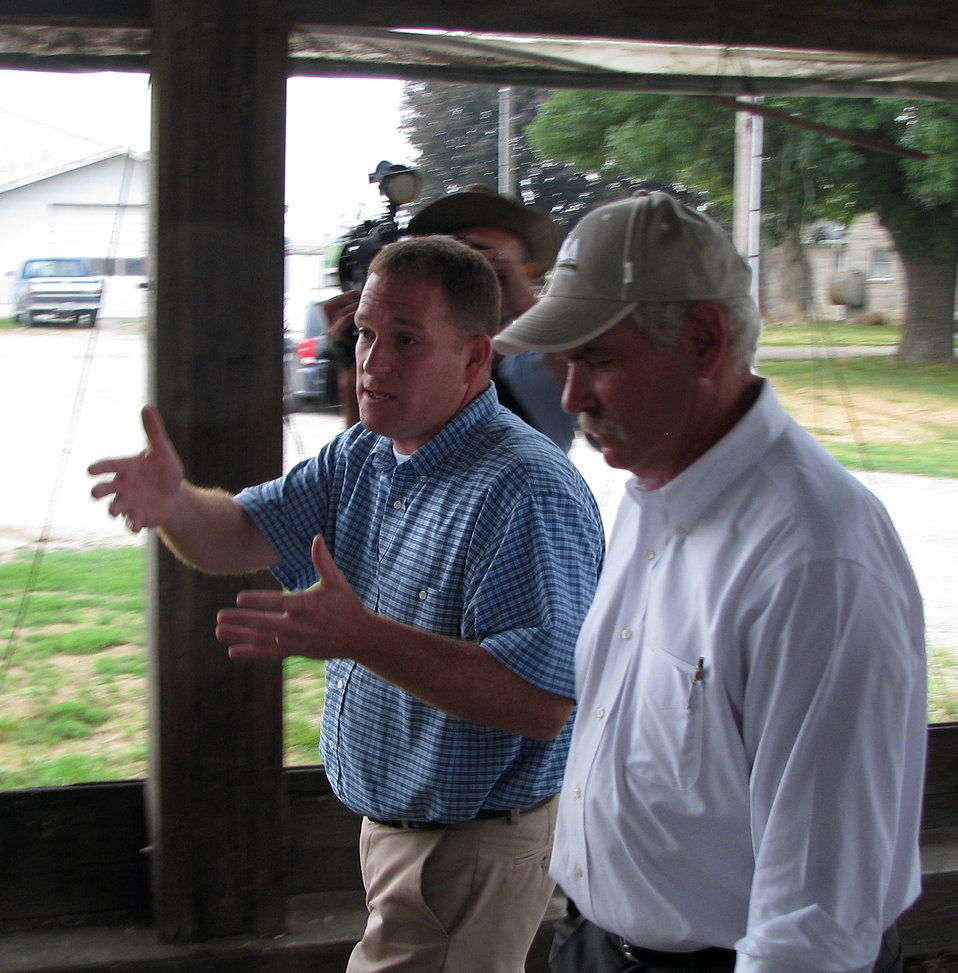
Agriculture Under Secretary for Farm and Foreign Agriculture Service (FFAS) Michael Scuse (right) talks with dairy producer Joe Kelsey about the challenges to the diary industry caused by the drought in Whiteland, IN on Thursday, July 19, 2012. Agriculture Secretary Vilsack has instructed Agriculture subcabinet leaders to travel to affected drought areas to augment ongoing assistance from state-level U.S. Department of Agriculture (USDA) staff and provide guidance on USDA’s new, streamlined disaster process. The U.S. Drought Monitor currently reports that 61 percent of the continental United States is in a moderate to exceptional drought.